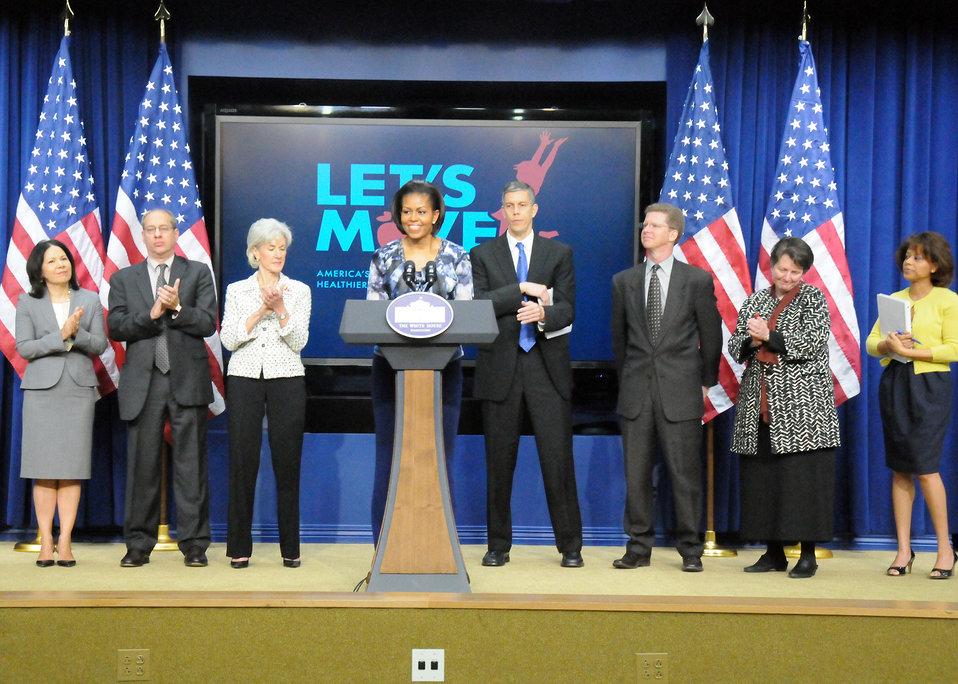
First Lady Michelle Obama and the Childhood Obesity Task Force announced its action plan, “Solving the Problem of Childhood Obesity Within a Generation,' during a press conference at the Eisenhower Executive Office Building in Washington, D. C., on Tuesday, May 6, 2010. (L to R Office of Health Reform Director Nancy-Ann DeParle, Federal Trade Commission Chairman Jon Leibowitz, Health and Human Services Secretary Kathleen Sebelius, Education Secretary Arne Duncan, Housing and Urban Development Secretary Shaun Donovan, Agriculture Deputy Secretary Kathleen Merrigan, and Domestic Policy Council Director Melody Barnes) USDA photo 10di1354- 33